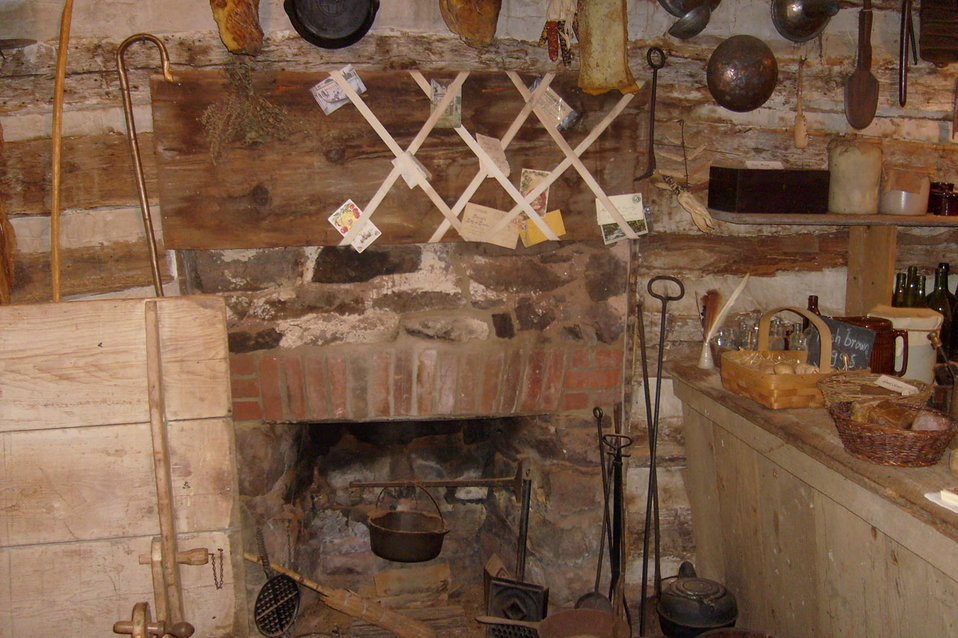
Inside cabin fire place.